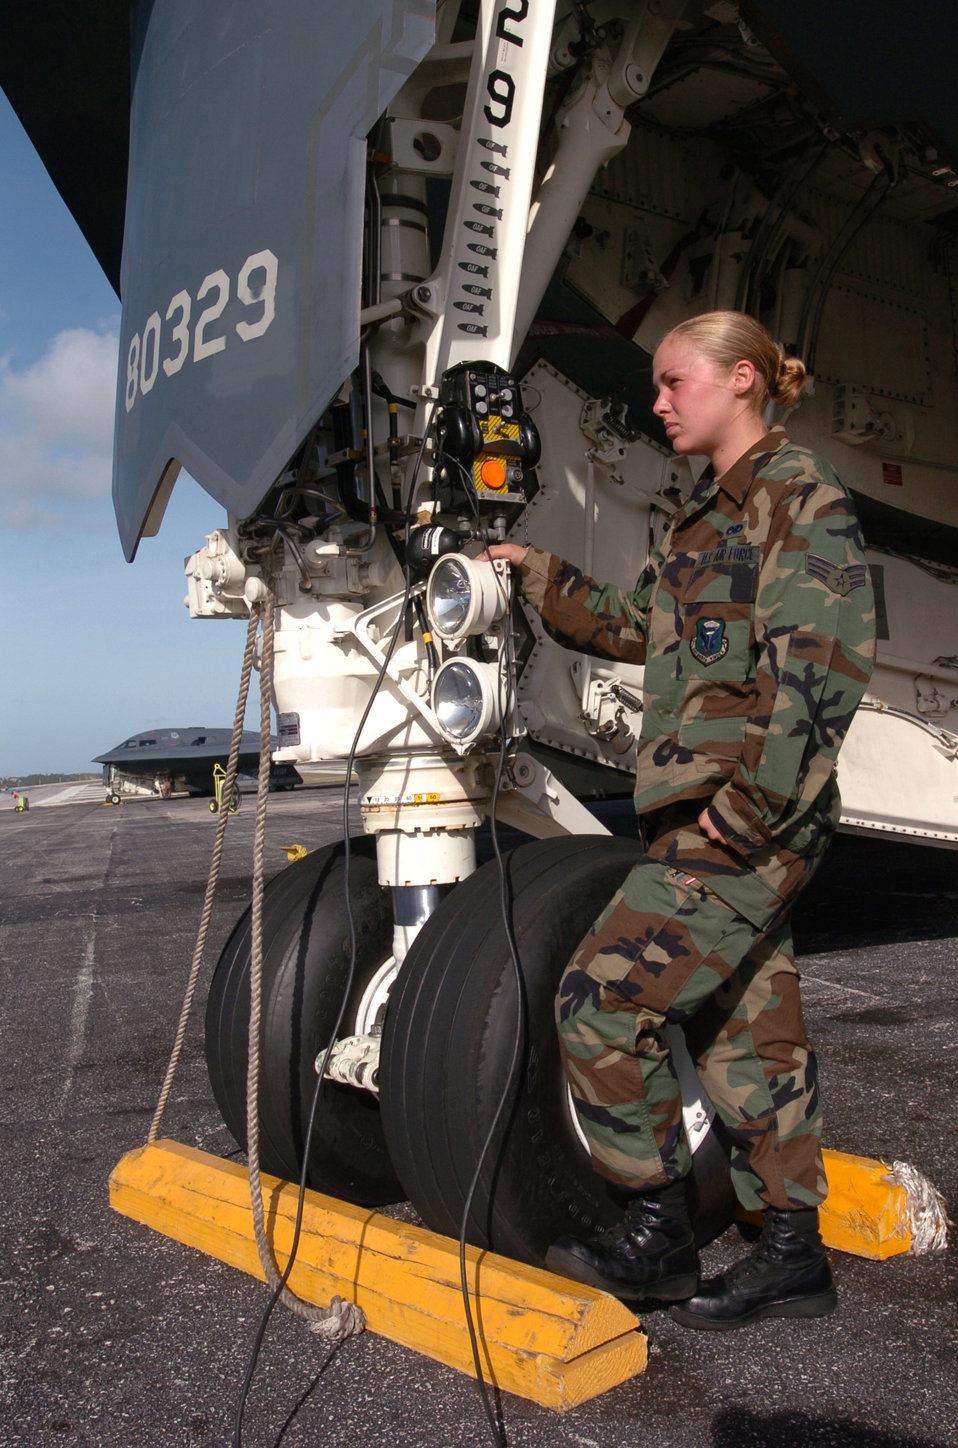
Airmen help improve B-2 aircraft maintenance in Guam

ANDERSEN AIR FORCE BASE, Guam -- Senior Airman Mindy High waits for an aircrew before a morning launch here. B-2 Spirit bombers deployed here Feb. 25 to provide U.S. Pacific Command officials a continuous bomber presence in the Asia-Pacific region, enhancing regional security and the U.S. commitment to the Western Pacific. Bomber aircraft have had an ongoing presence on the island since February 2004. Airman High is a crew chief from the 509th Bomb Wing at Whiteman Air Force Base, Mo.